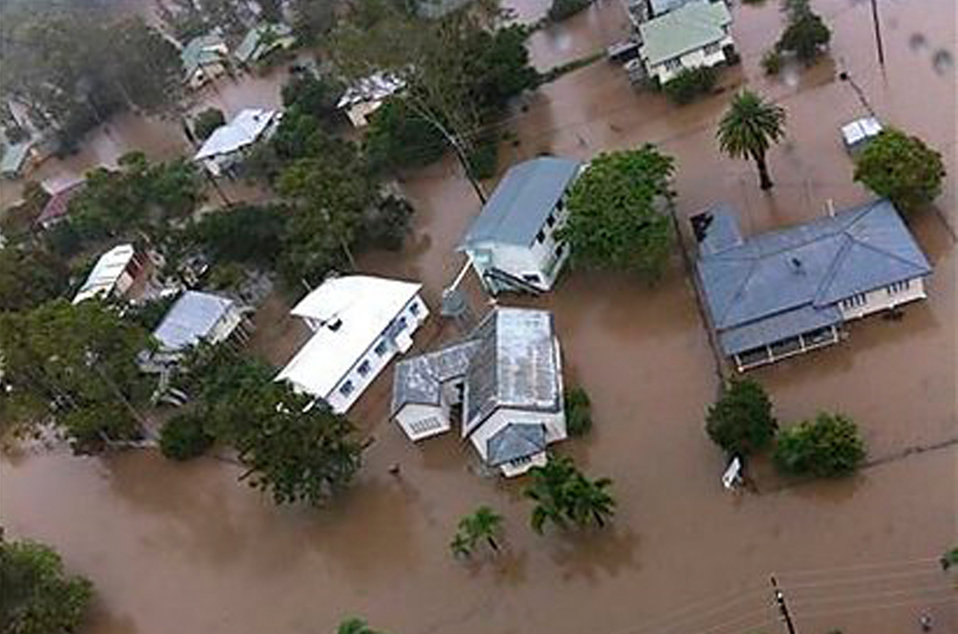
Arkansas Flood Photo of Community Under Water